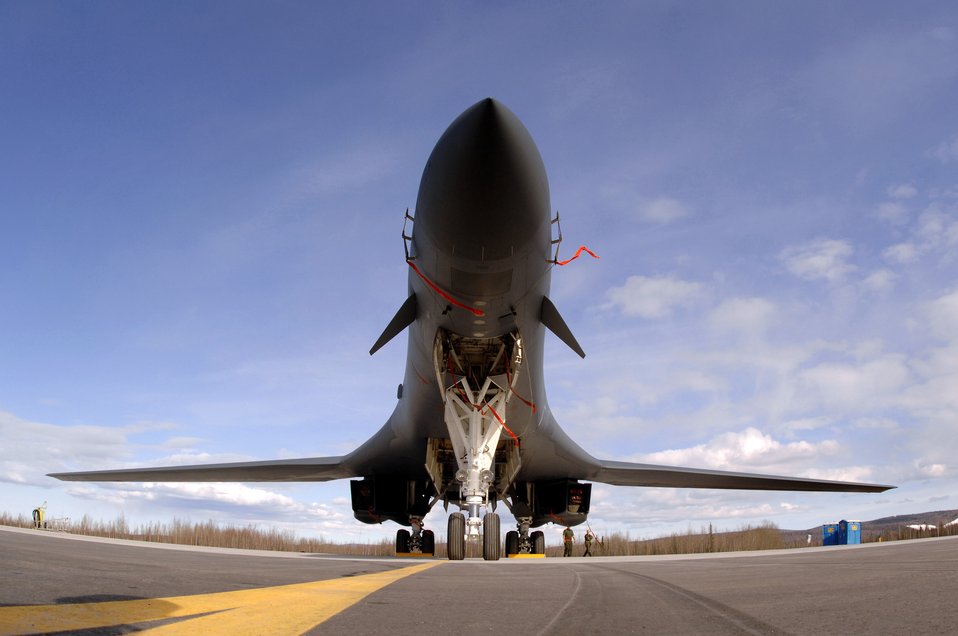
Red Flag-Alaska strengthens coalition forces

A B-1B Lancer from Ellsworth Air Force Base, S.D., sits on the flightline at Eielson Air Force Base, Alaska, April 9 during Red Flag-Alaska 07-1. Red Flag-Alaska enables aircrews to sharpen their combat skills by flying simulated combat sorties in a realistic threat environment. Additionally, the training allows them to exchange tactics, techniques, and procedures and improve interoperability.